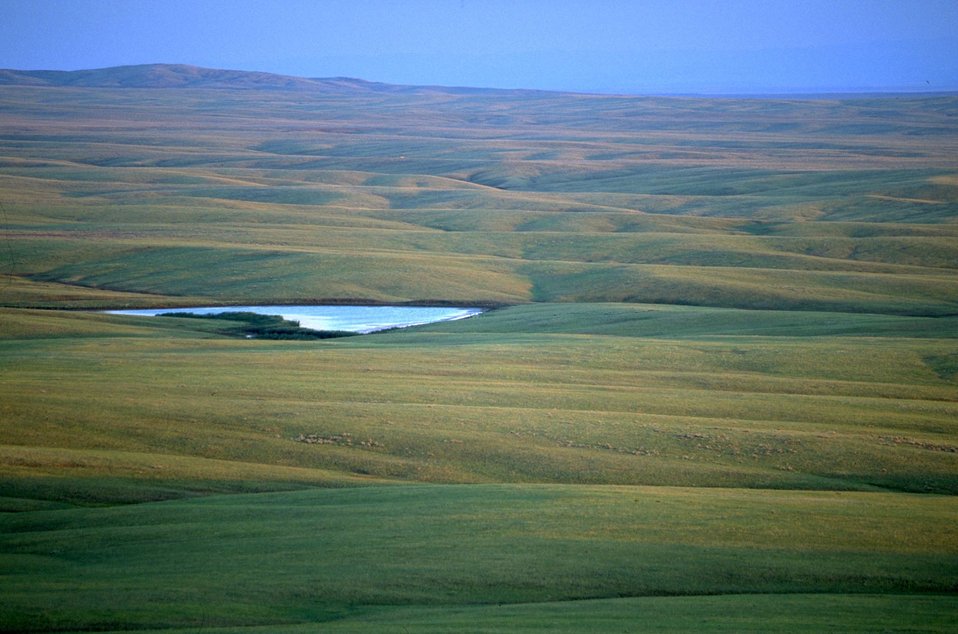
Grassland Vista with Reservoir 30 miles north of Belle Fourche